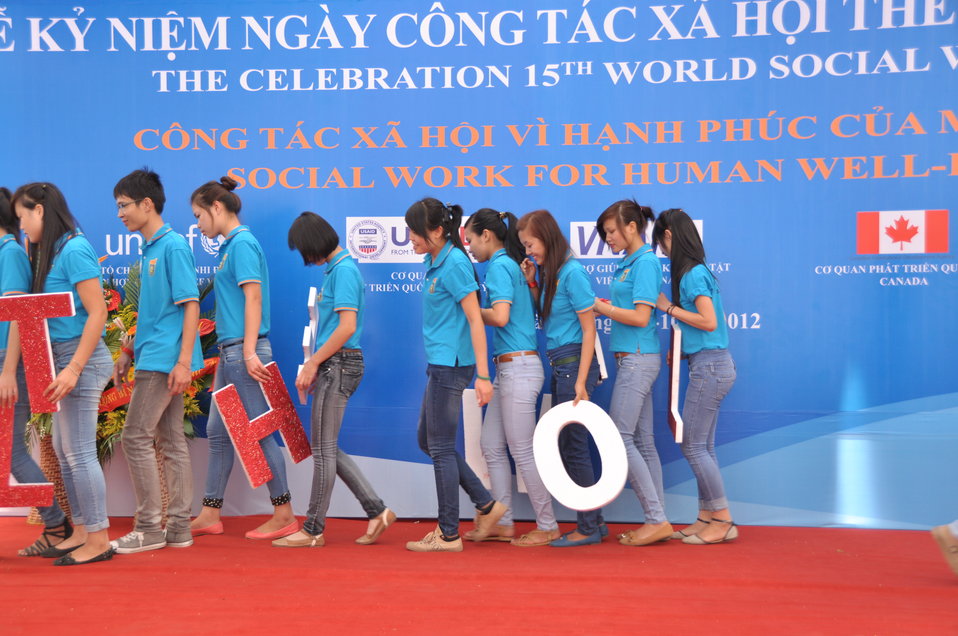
USAID Supports Social Work Education

Photo: @USAIDVietnam, November 9, 2012